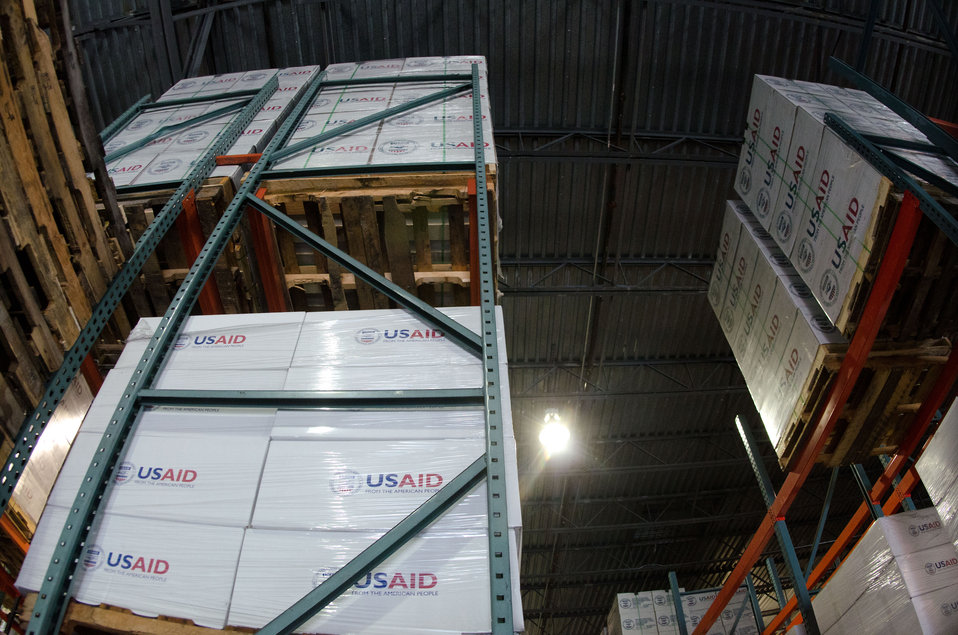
Crowley Logistics in Miami, FL on Friday, August 26, 2011 is one of three U.S. Agency for International Development (USAID) shipping and logistics facilities in the nation. In times of emergency humanitarian relief aid, they can respond with supplies delivered to aircraft at Miami International Airport within two hours. They utilize articulating forklifts, which hinge in the middle to store and retrieve pallets of supplies through narrow aisle ways. This allows for a higher density of stored supplies in the warehouse. Pallets of supplies are stacked three levels high. USAID provides humanitarian assistance through the Office of U.S. Foreign Disaster Assistance (OFDA). OFDA is the lead U.S. Government (USG) office charged with providing and coordinating USG humanitarian assistance in response to international emergencies and disasters. To achieve this, USAID works in cooperation with other USG offices such as the U.S. Department of Agriculture (USDA), and international humanitarian experts. The USDA provides food assistance to support emergency feeding programs in countries experiencing food shortages due to drought and civil conflict.